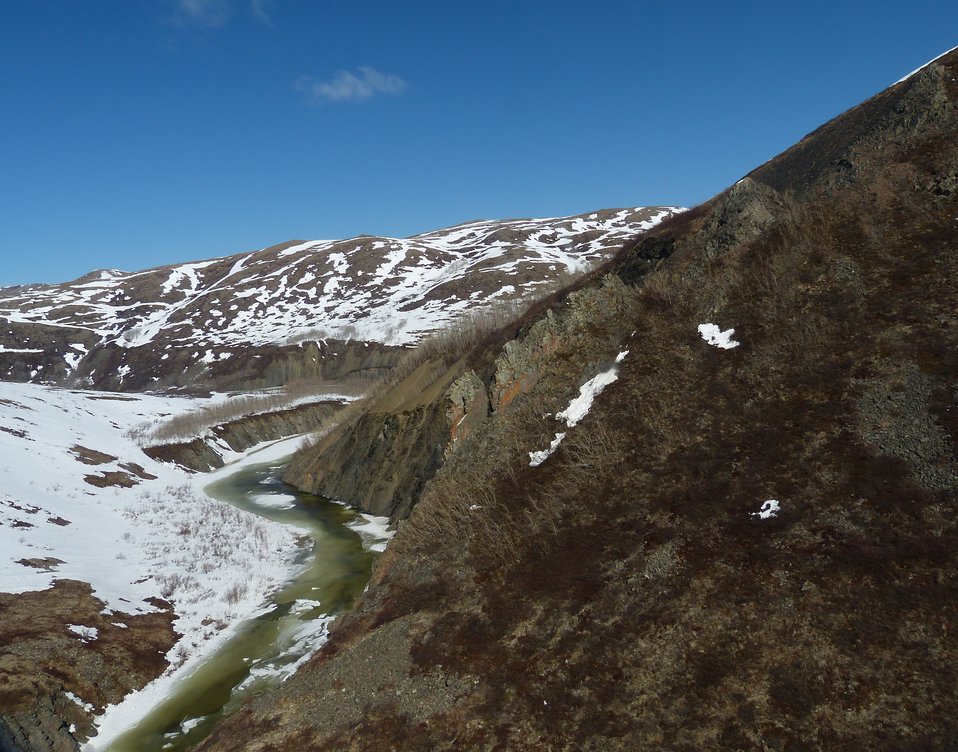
Kilbuck Mountains May2013 KSowl

Cliff-nesting raptor survey, Kilbuck Mountains, Yukon Delta National Wildlife Refuge

Photo credit: Kristine Sowl,
USFWS, YDNWR